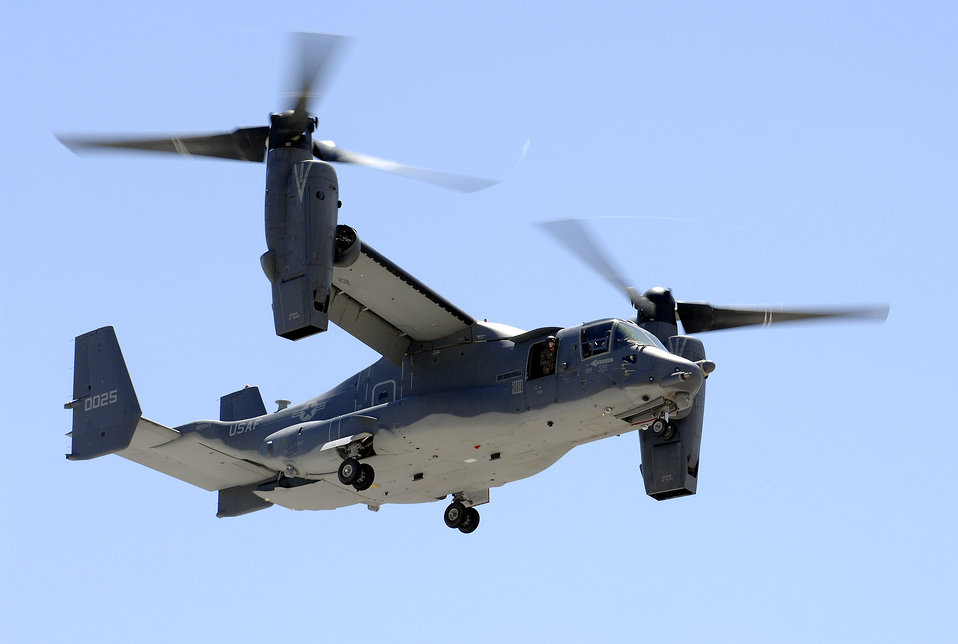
Osprey comes for a visit

A CV-22 Osprey prepares to land at the U.S. Air Force Academy May 11. Cadets in the Department of Aeronautical Engineering's High-Performance Computing Research Center contributed to making this aircraft an operational reality through their research in computational fluid dynamics.